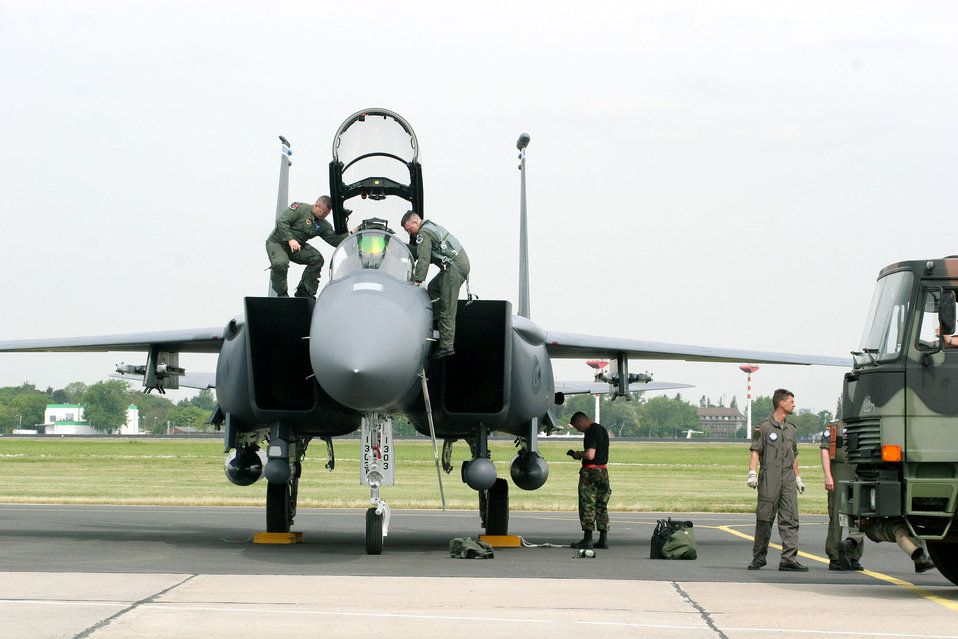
U.S. opens Berlin Airlift Show with

Air Force Capts. D.J. Vollmer (left) and John Beatty exit their F-15E Strike Eagle shortly after arriving at the Berlin Air Show May 15, 2006. Various models of U.S. military aircraft and about 60 support personnel from bases in Europe and the United States are attending the air show at Berlin-Schoenefeld Airport May 16-21. The two captains are pilots with the 493rd Fighter Squadron at Royal Air Force Lakenheath, England.